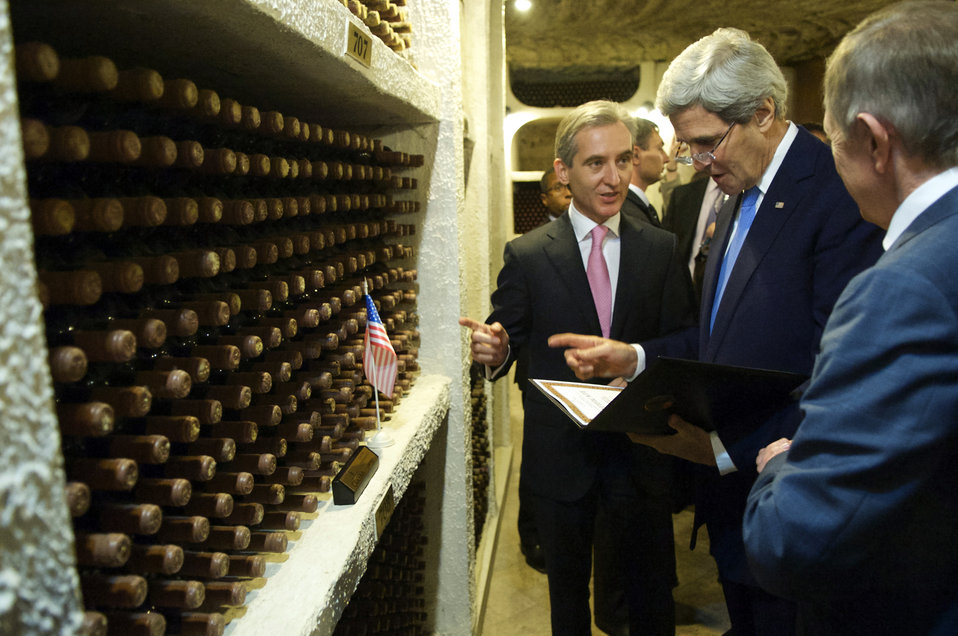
Secretary Kerry Examines a Certificate as the Moldovans Designate a Bin of Wine in His Honor

Moldovan Prime Minister Lurie Leanca, left, shows U.S. Secretary of State John Kerry a bin of local wine reserved in his honor during a tour of a vast cellars at the Cricova Winery following an economic development event outside outside Chisinau, Moldova, on December 4, 2013.